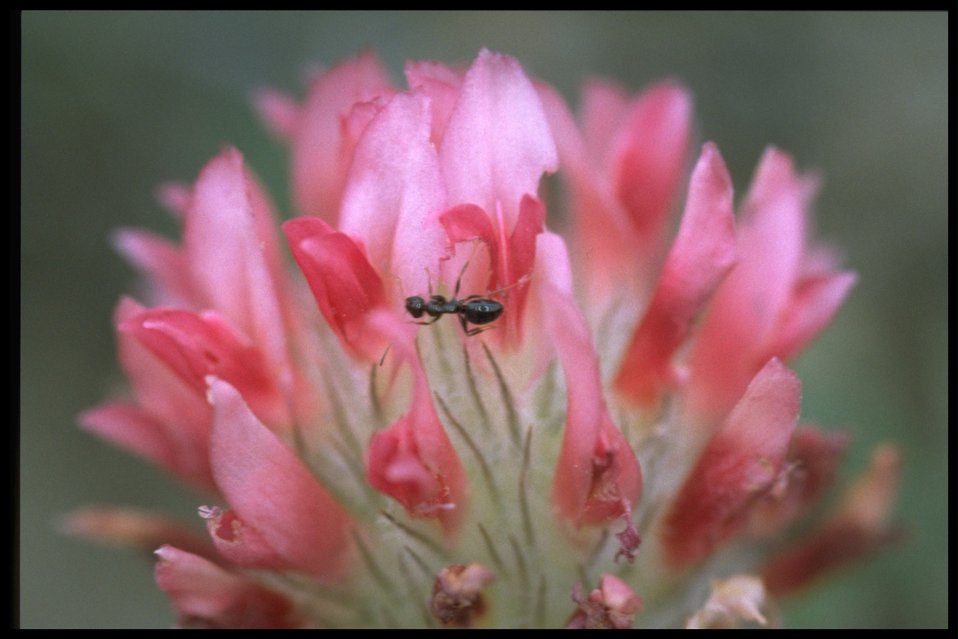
Closeup shot of bighead clover (Trifolium macrocephalum).